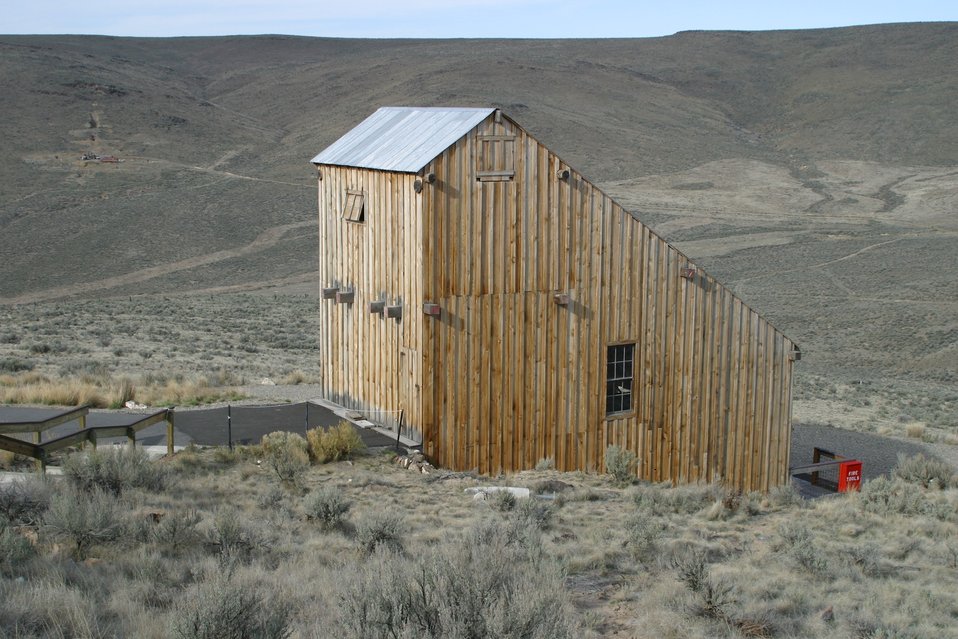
A replica of the Rabbit Mine 1926 stamp mill near Greenhorn in the Blue Mountains of eastern Oregon. It is used to interpret the importance of mining in western history, and the relationship of gold mining to the westward migration story.